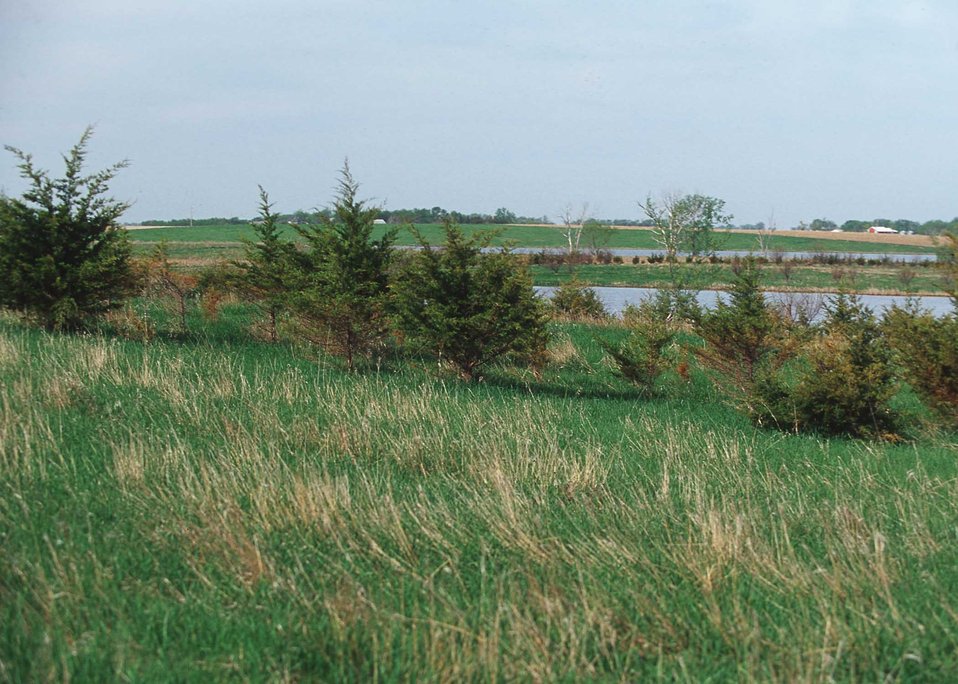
Native grass seedings interspersed with tree plantings to provide wildlife habitat adjacent to a wetland in the prairie pothole region of eastern South Dakota.